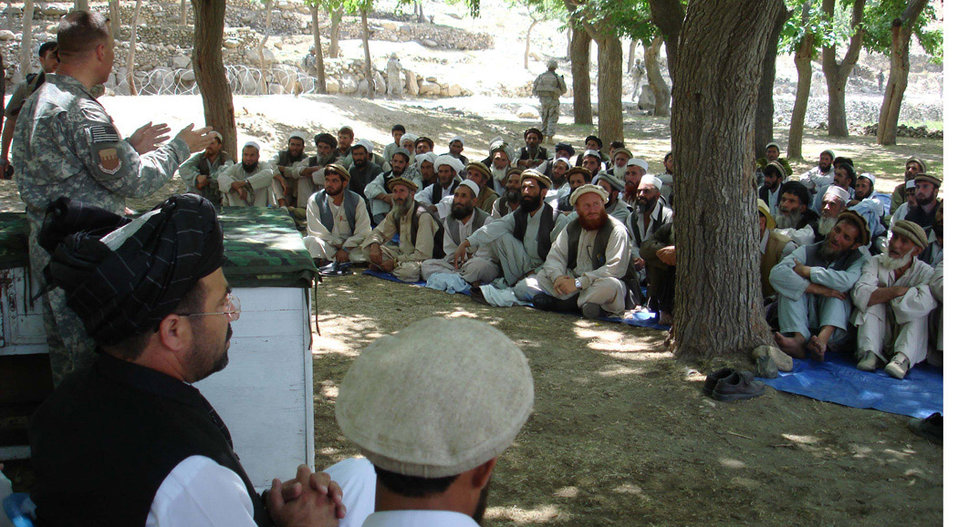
Pope Airman works with reconstructive team in Afghanistan

Lt. Col. Robert Ricci speaks to a group of more than 200 elders at a shura as part of his duties leading the Mehtar Lam Provincial Reconstruction Team in Afghanistan. Colonel Ricci is assigned to the 43rd Operations Support Squadron at Pope Air Force Base, N.C.